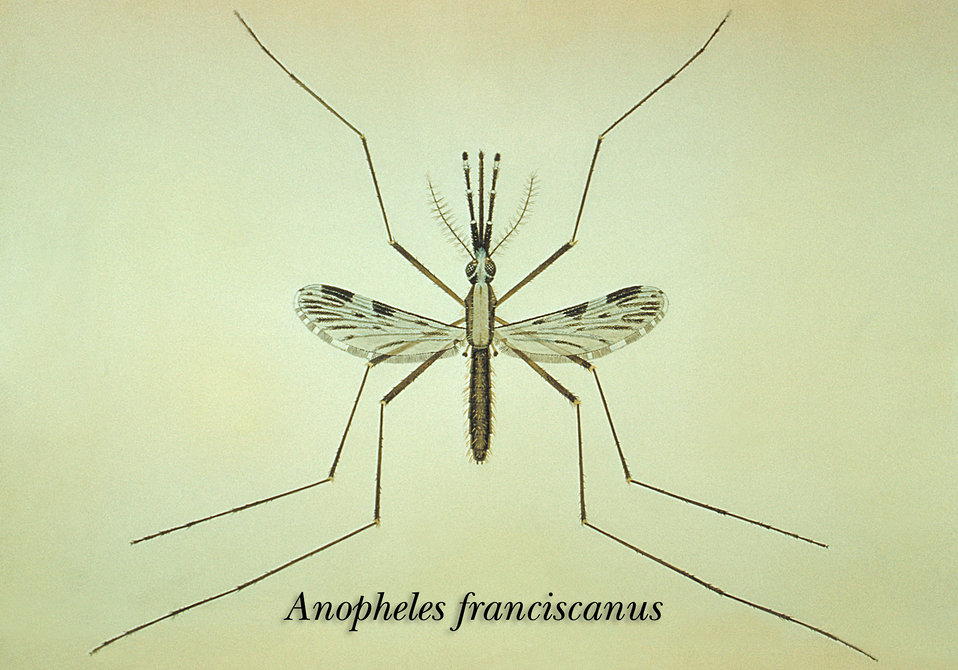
An illustration of the Anopheles franciscanus mosquito.